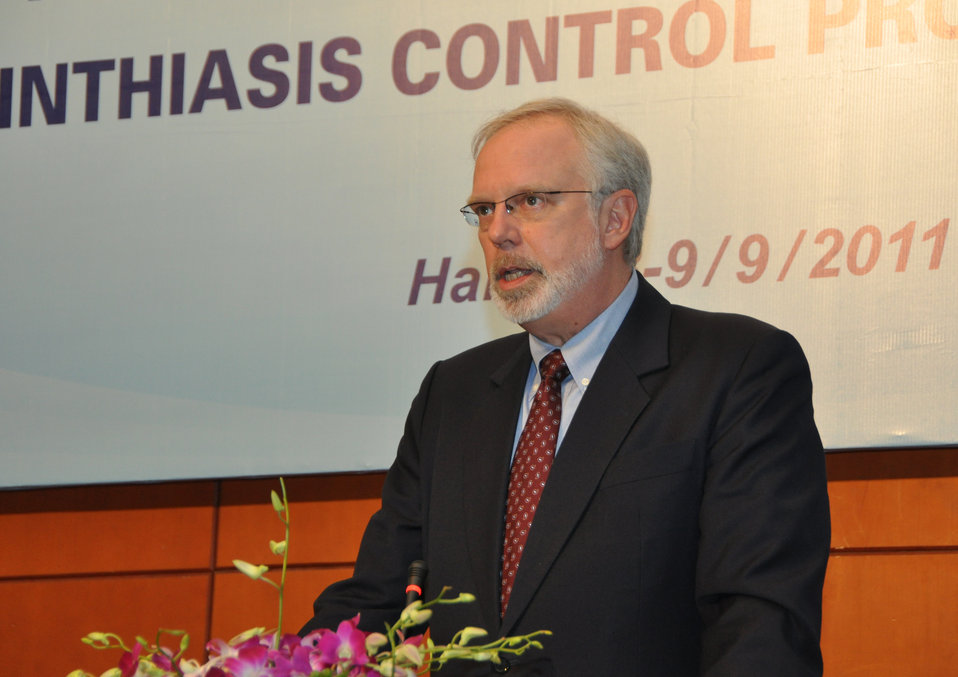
U.S. Ambassador David Shear speaks at neglected tropical diseases workshop in Hanoi, Sept. 8, 2011